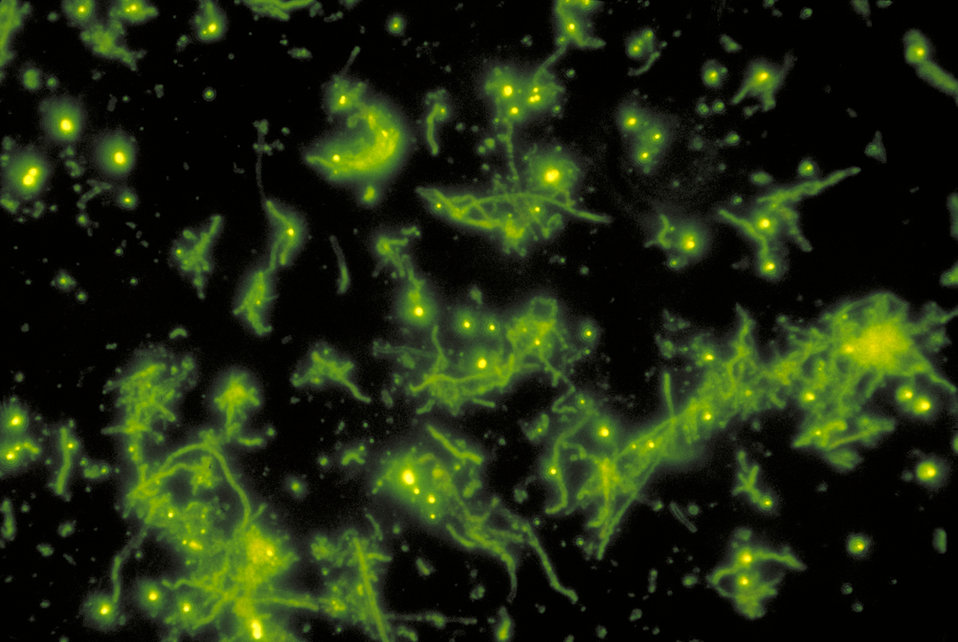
A photomicrograph of Actinomyces naeslundii using Direct FA staining technique.